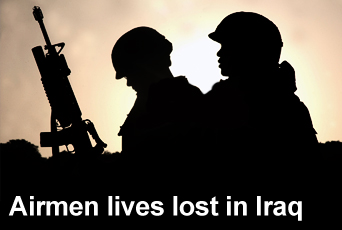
Airmen lives lost

The Department of Defense announced Jan. 8, 2007 the death of three airmen who were killed Jan. 7 by a vehicle-borne improvised explosive device while performing duties in the Baghdad area supporting Operation Iraqi Freedom.